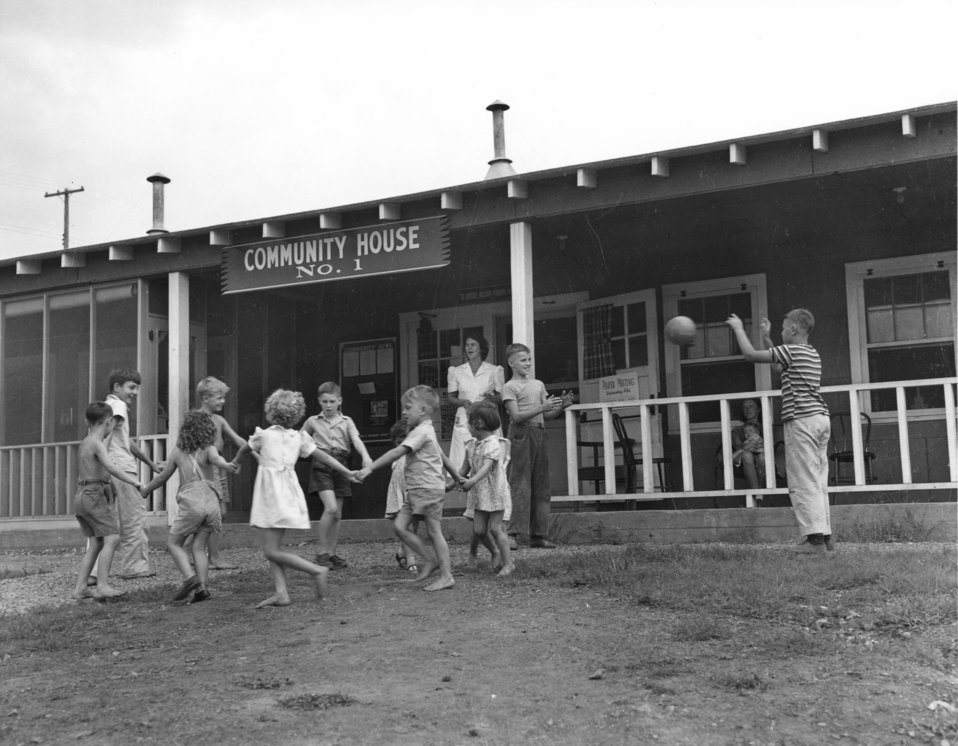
Daily Life at Oak Ridge
COMMUNITY HOUSE